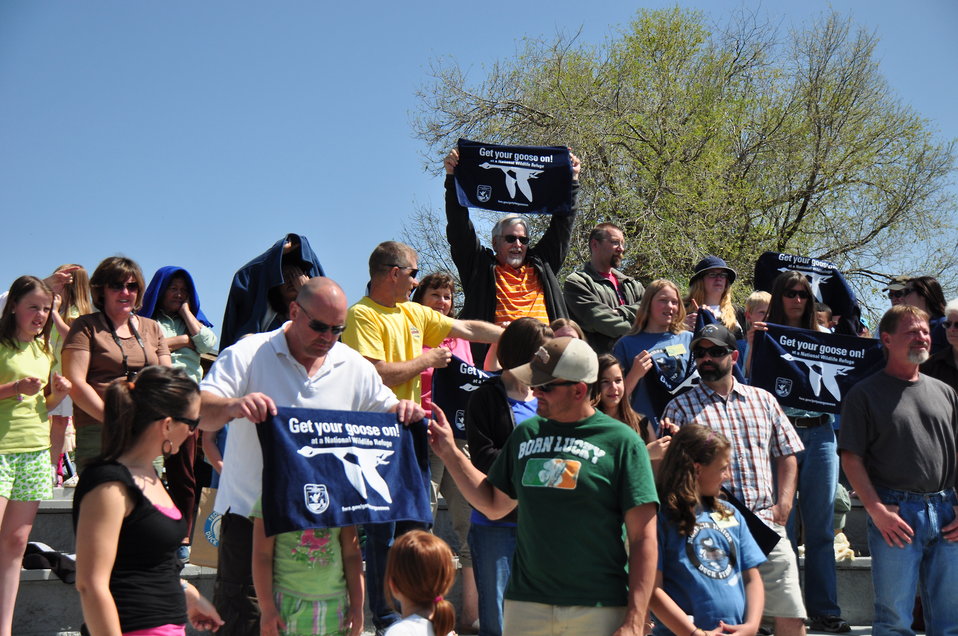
Get Your Goose On!!!

More than 100 people attended the 2012 Montana Junior Duck Stamps award ceremony. The folks pictured here posed with their towels as a videographer captured footage of them screaming, in unison, 'Get Your Goose On!'